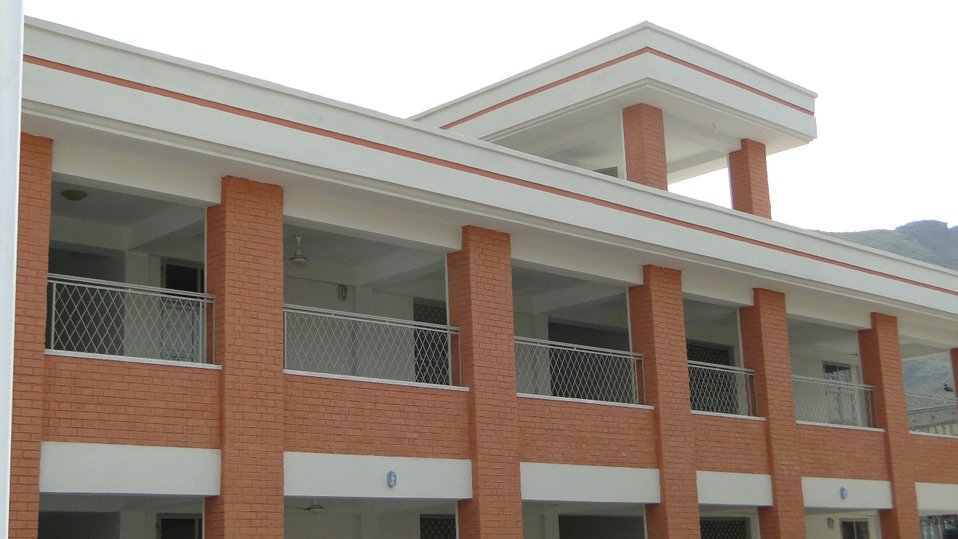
Buner School

Peshawar, March 14, 2012 - The Provincial Reconstruction, Rehabilitation and Settlement Authority (PaRRSA) handed over today to the KP Education Department the first of the 122 U.S. Government-sponsored schools at Torwarsak, Buner.